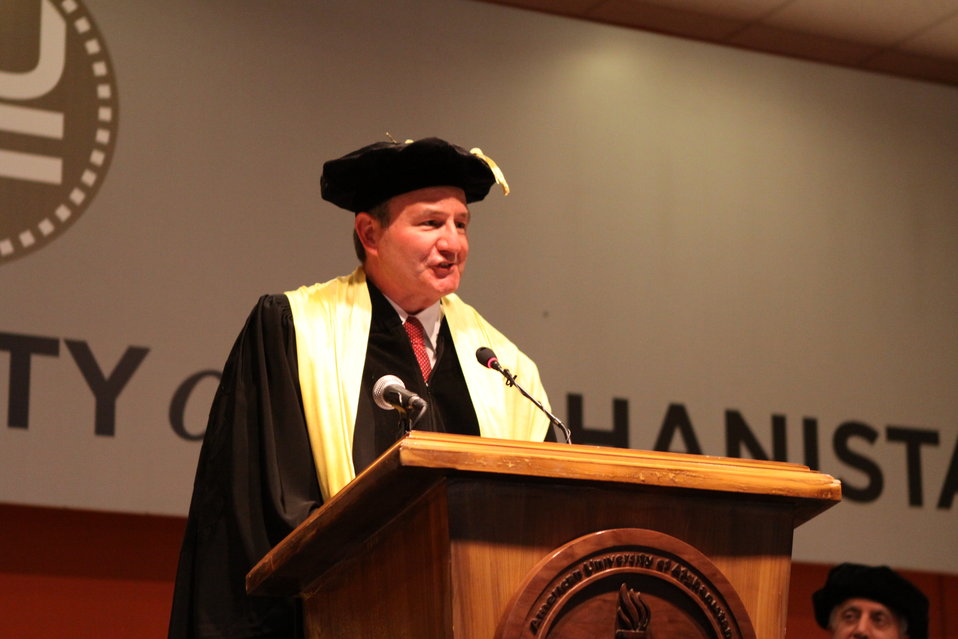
100526 AUAF Graduation 197